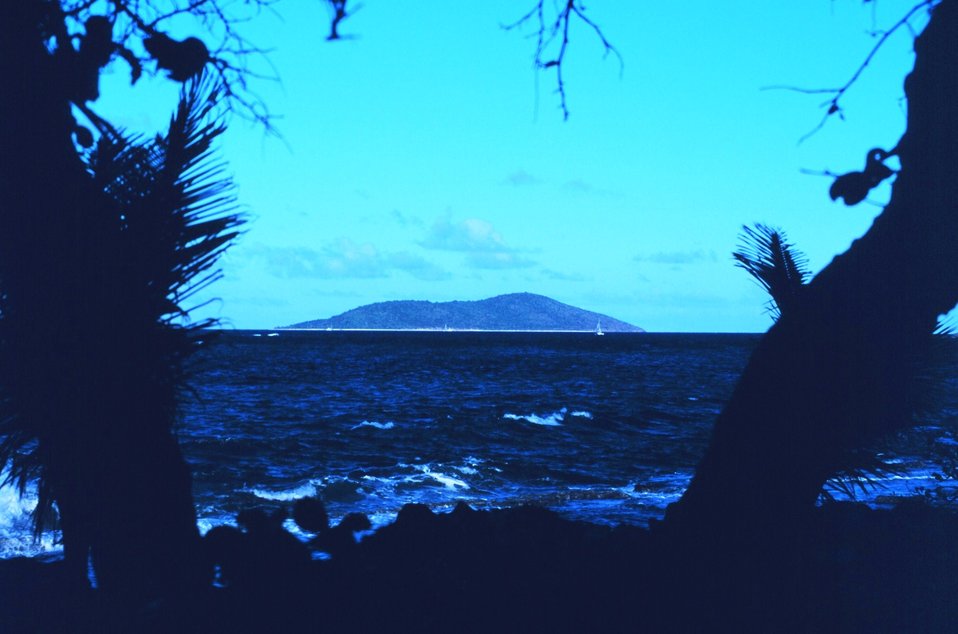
View of Buck Island Reef National Monument from Chenay Bay on Green Cay.